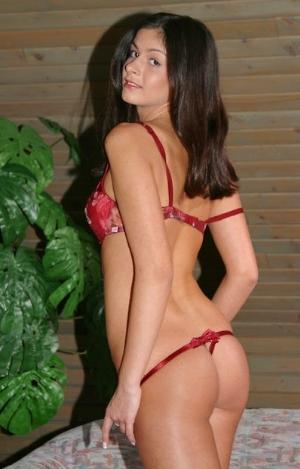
Lucy Lee (Czech)